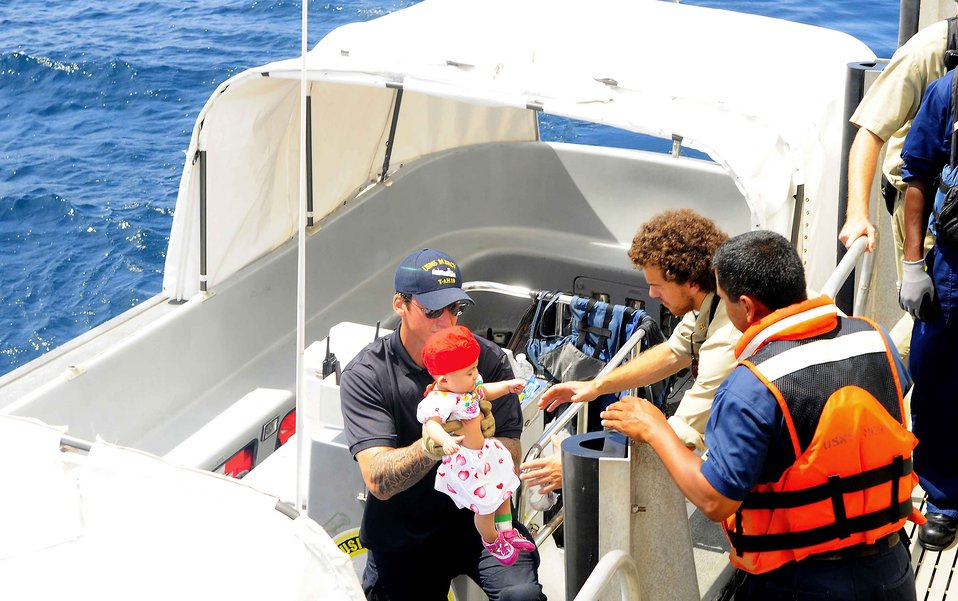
Two civilian mariners work together to safely embark an infant medical patient aboard the Military Sealift Command hospital ship USNS Mercy (T-AH 19) on July 18, 2010. Pacific Partnership 2010 is the fifth in a series of annual U.S. Pacific Fleet endeavors conducted in Indonesia as a disaster relief exercise aimed at strengthening regional relationships and partner nations in Southeast Asia and Oceania.